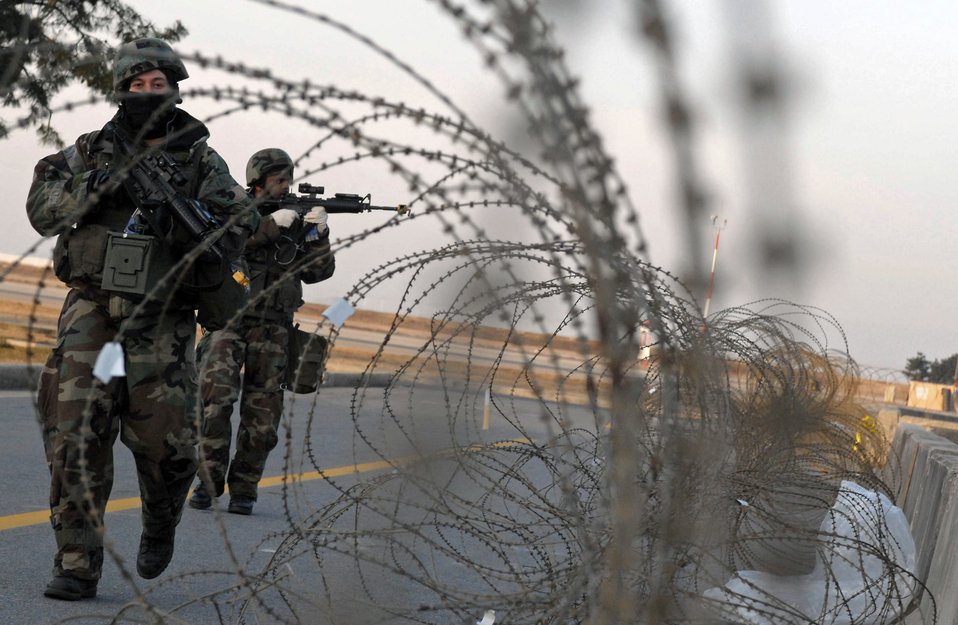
Remaining vigilant

Senior Airmen Alejandro DeLaFuente (front) and Anthony Leonard inspect the perimeter of Kunsan Air Base, South Korea, for